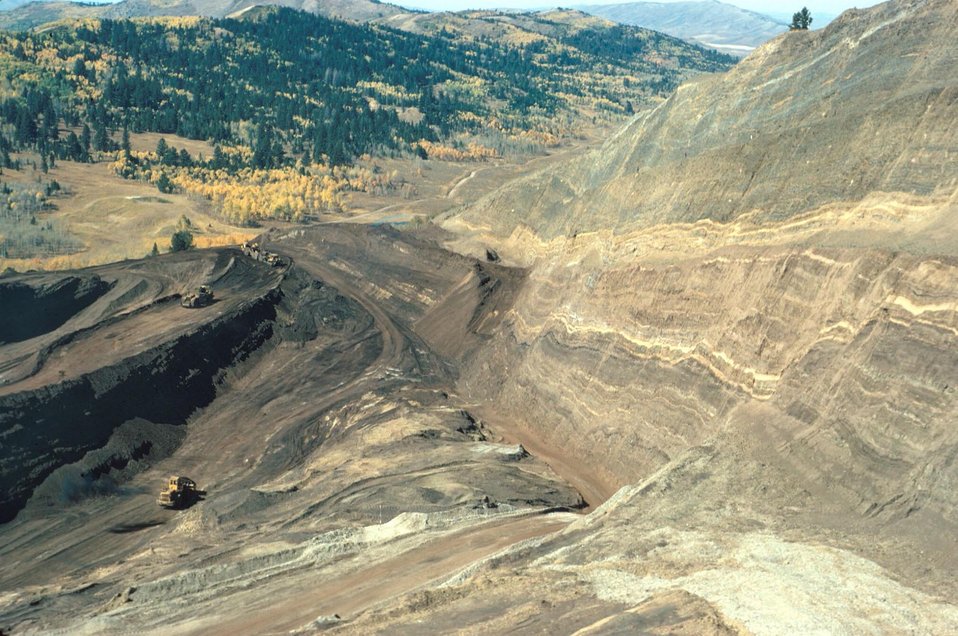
Wooley Valley Mine Pocatello Field Office USRD Upper Snake River District